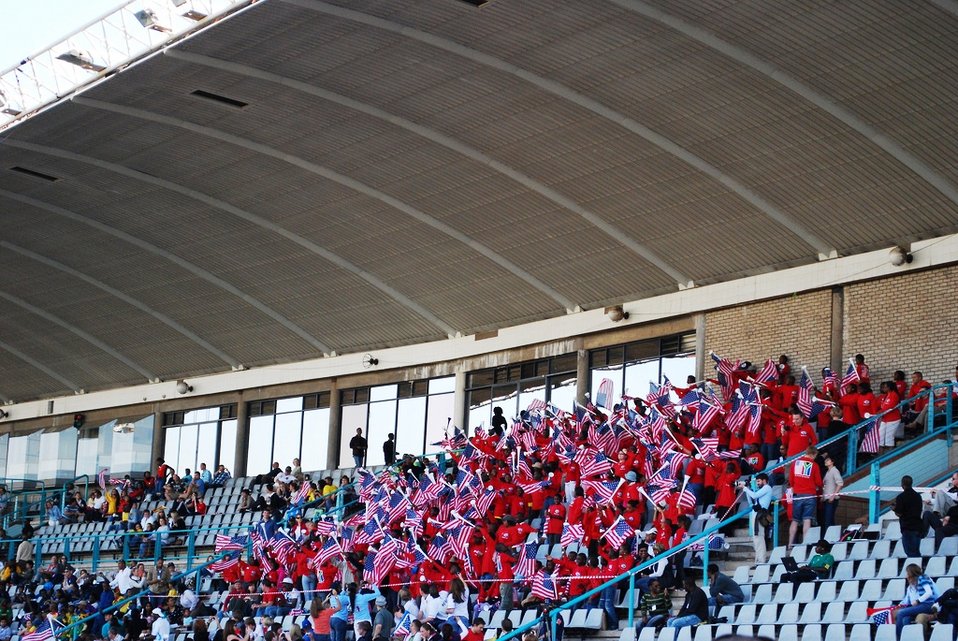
South African students and U.S. Mission to South Africa families cheer on the U.S. National Soccer Team at their open practice session at the Pliditch Stadium in Pretoria, South Africa, on June 6, 2010. The U.S. National Soccer Team is preparing for the 2010 World Cup in South Africa.